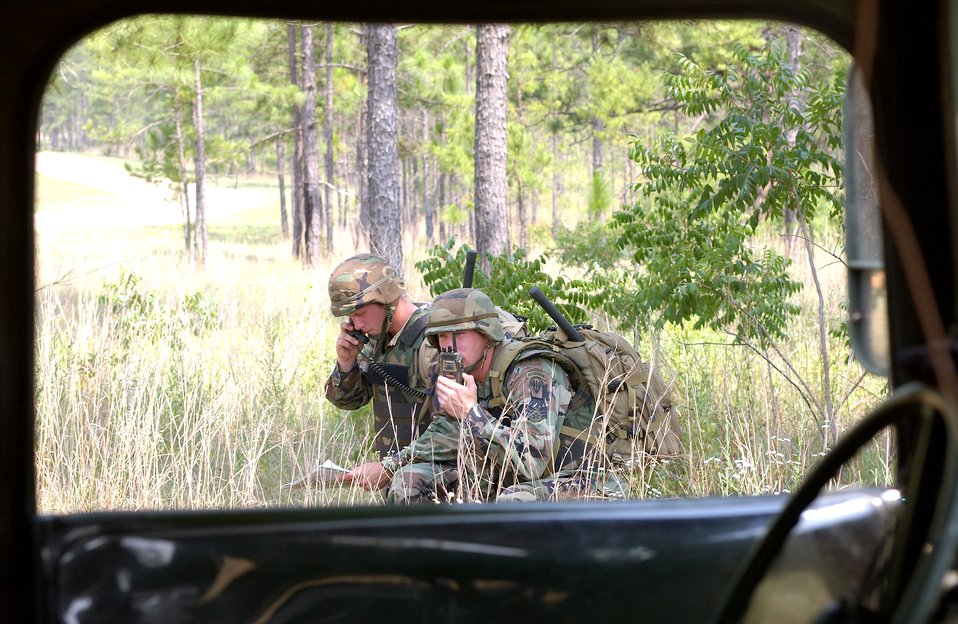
Air Warrior II tests aircrews and controllers

FORT POLK, La. -- Senior Airman Joshua Cullins (right) and Staff Sgt. Dan Kovarik guide an A-10 Thunderbolt II onto a target during a live-fire portion of Air Warrior II here. The joint exercise trains Army units with embedded Air Force Joint terminal attack controllers in a realistic battlespace. Troops face a live enemy force, local role players and a variety of targets for air and ground forces.